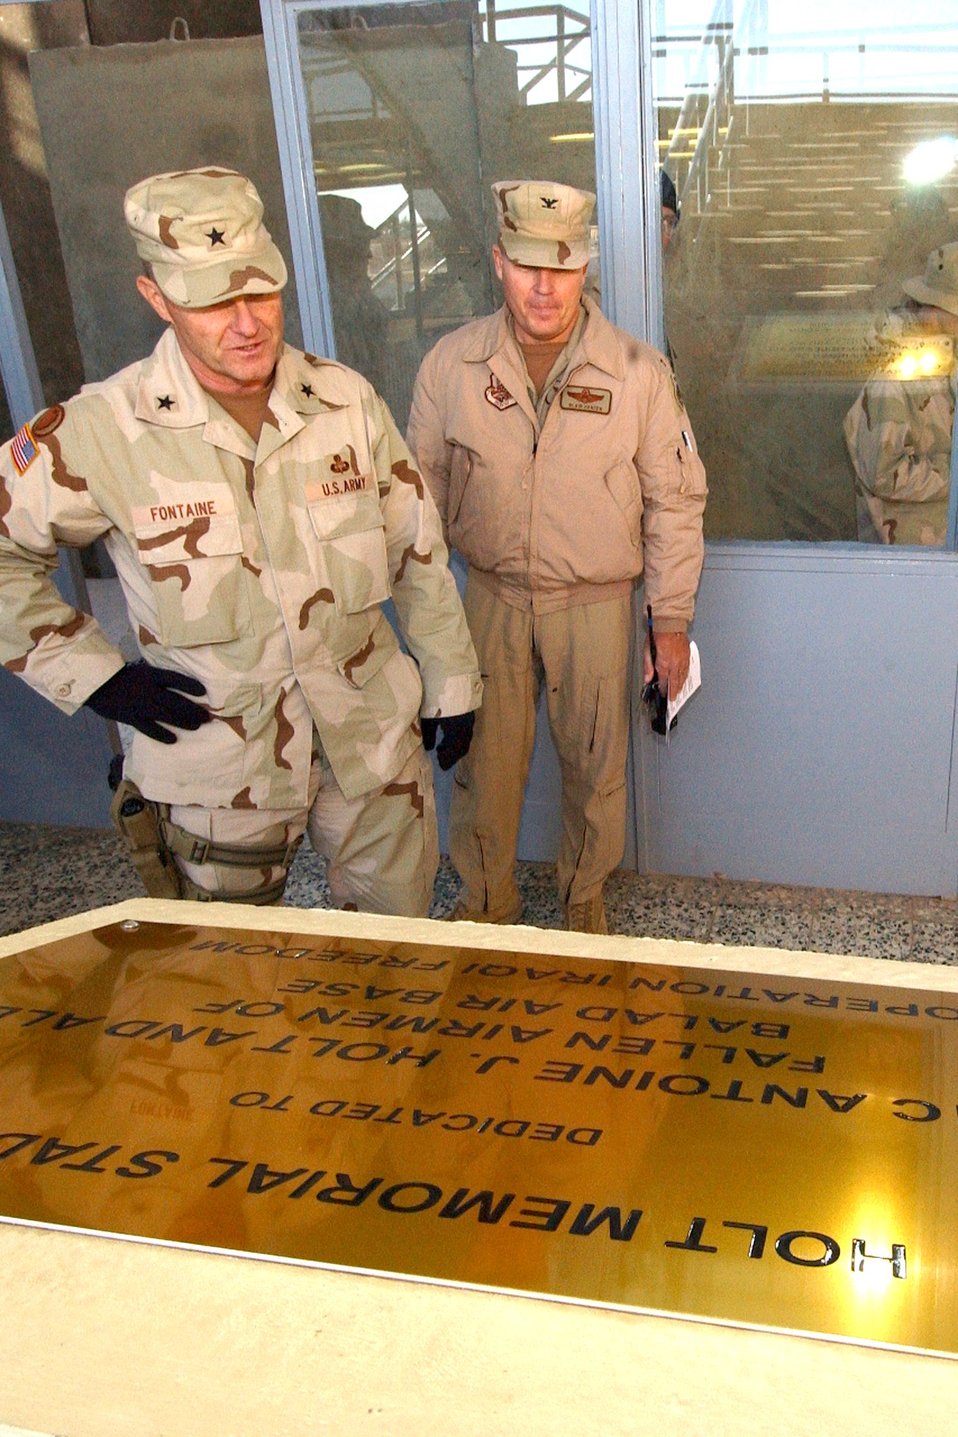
BALAD AIR BASE, Iraq – Army Brig. Gen. Yves Fontaine, commander of the 1st Corps Support Command, and Col. Blair E. Hansen, 332nd Air Expeditionary Wing commander, read a plaque which dedicates the base stadium to Airman 1st Class Antoine J. Holt, who died in April during an attack on the base.